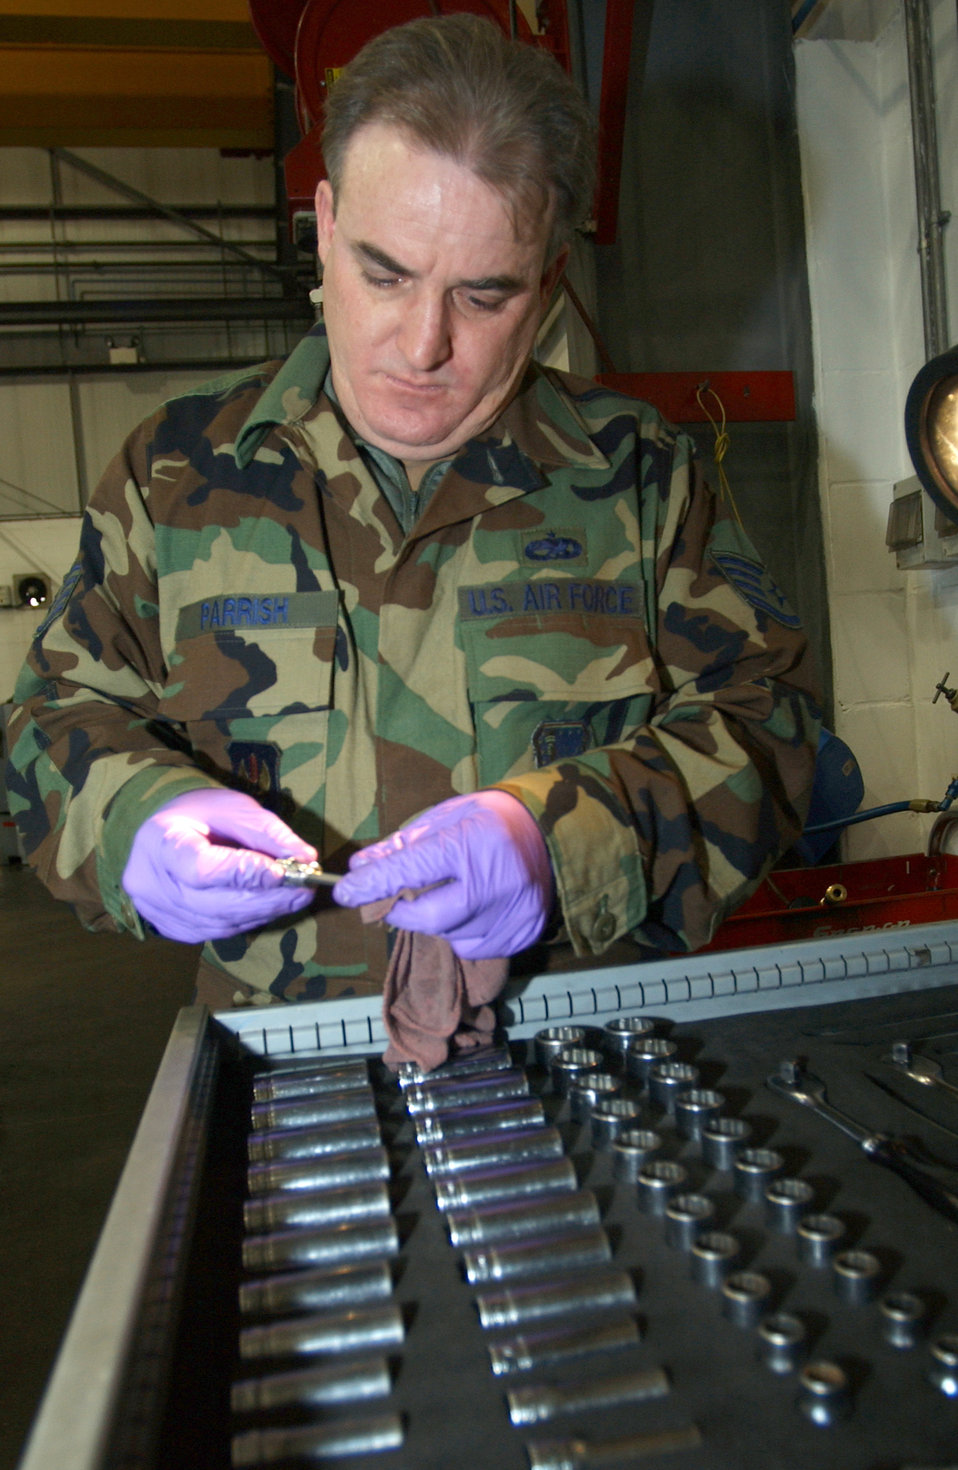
Tool man

ROYAL AIR FORCE LAKENHEATH, England -- Staff Sgt. Michael Parrish performs a quarterly inspection on a tool box here April 6. Sergeant Parrish is an aircraft ground equipment journeyman with the 48th Equipment Maintenance Squadron.